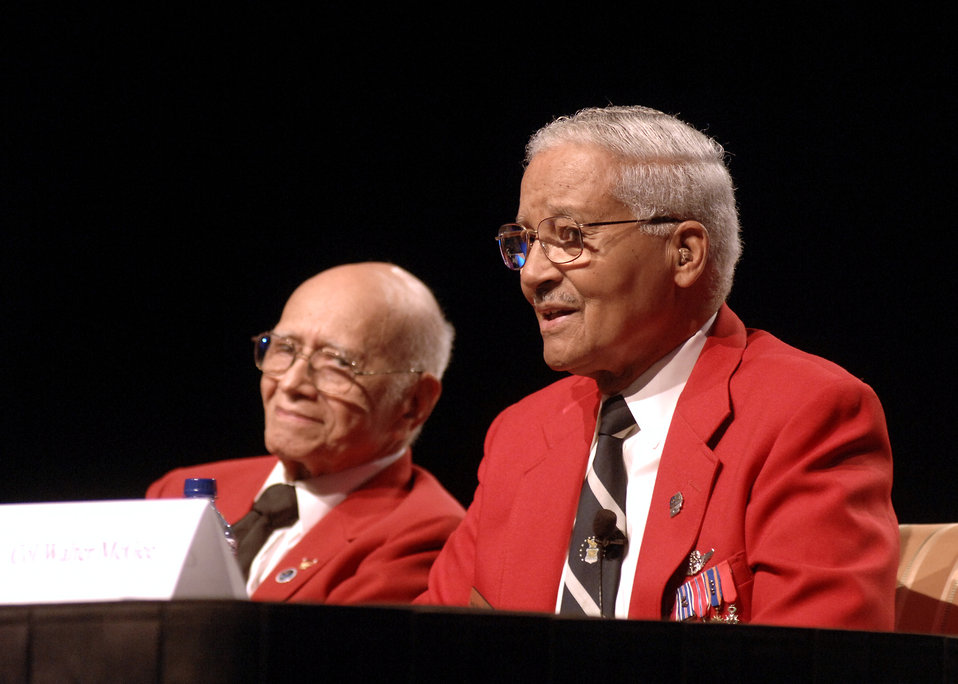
Air Force Association honors Doolittle Raiders, Tuskegee Airmen

Retired Col. Elmer Jones and retired Col. Charles McGee address an audience during an open forum at the 2009 Air Force Association Air & Space Conference and Technology Exposition Sept. 15, 2009, at the National Harbor in Oxon Hill, Md. Colonels Jones and McGee are original Tuskegee Airmen, and were honored with lifetime achievement awards from Air Force Association officials.